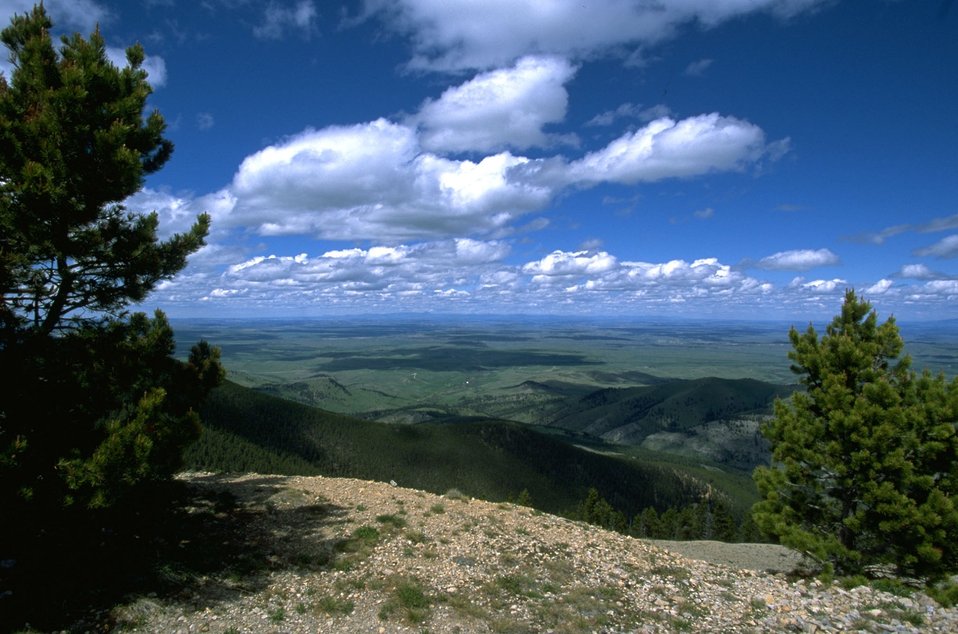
Clouds forming shadowy patterns on a valley in the Judith Mountains